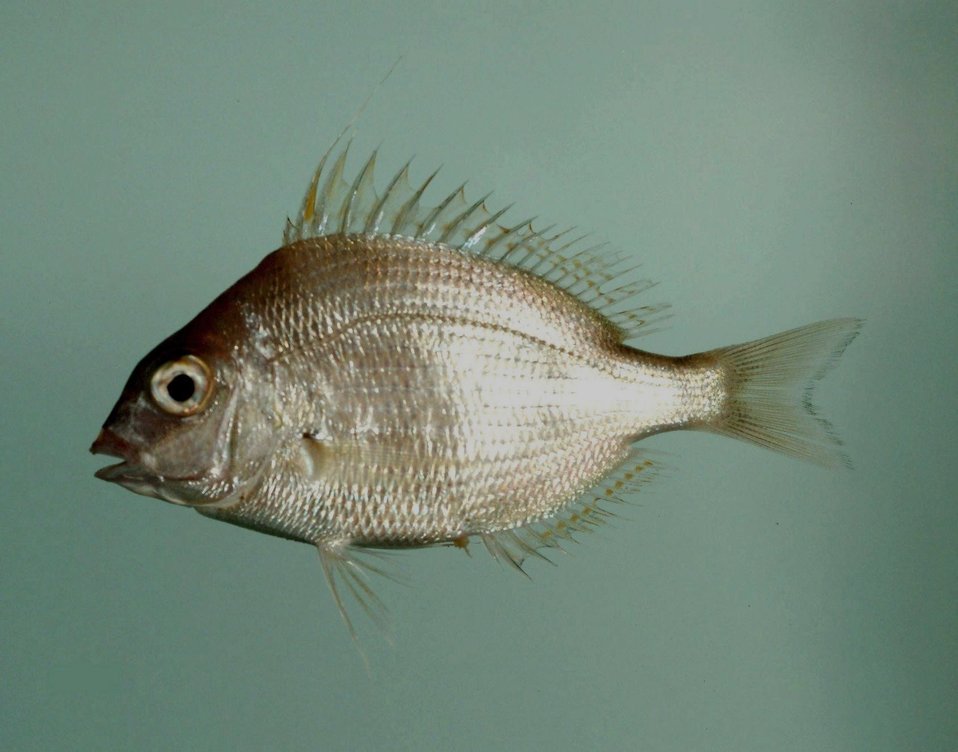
Longspine porgy ( Stenotomus caprinus )